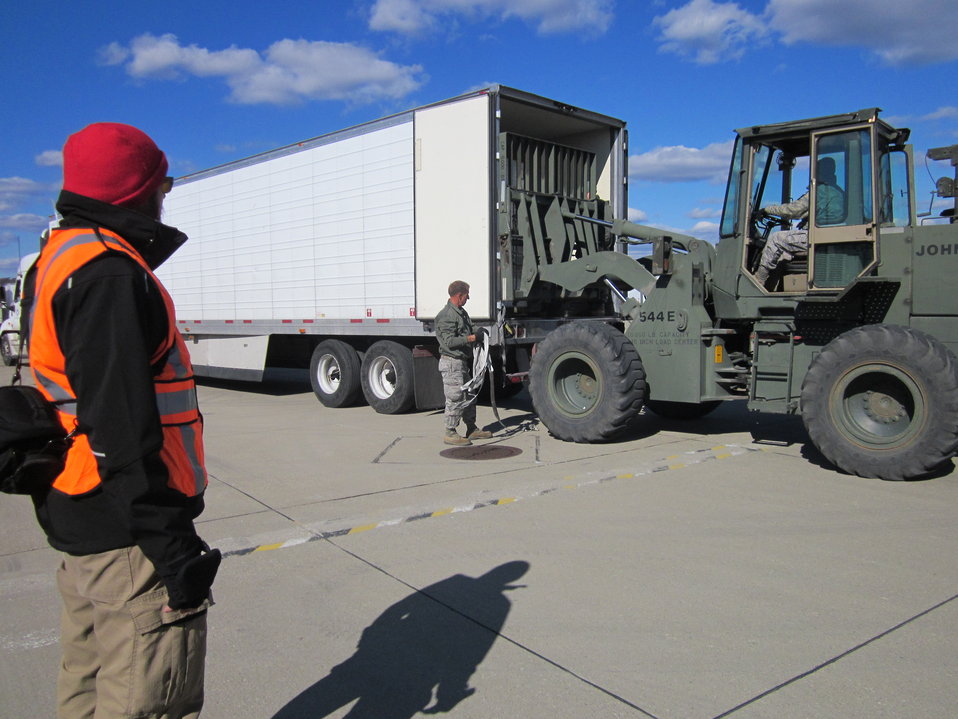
Unloading relief supplies (WV)

Charleston, WV, Nov. 2, 2012: While on a FEMA assignment, Josh O'Connor, Division Supervisor of the Southern Area Red Type 1 Incident Management Team watches as the National Guard unloads storm relief supplies at a Logistical Staging Area at Yeager Airport. Food, water, generators and other supplies were collected and distributed by the National Guard for storm victims. About 700 pallets of water and 300 pallets of food were distributed.O'Connor is a fire management specialist at the Atlanta, Georgia Regional Office of the U.S. Fish and Wildlife.